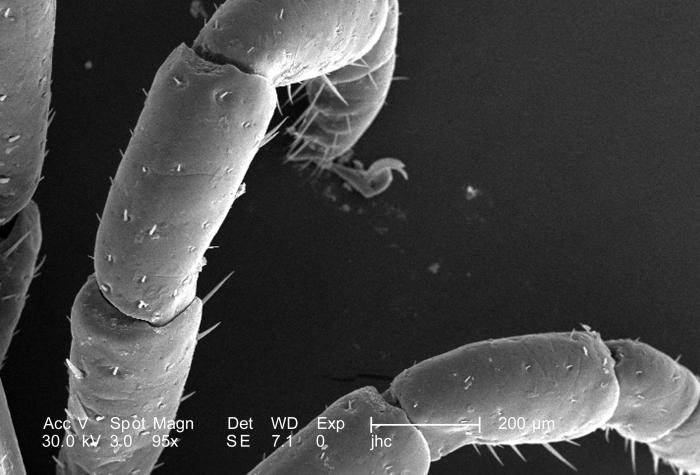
Under a relatively low magnification of 95X, this scanning electron micrograph (SEM) provided a closer view of this male Dermacentor sp. tick found upon a cat in the suburbs of Decatur, Georgia, which measured approximately 3.5mm from its gnathosoma (i.e., capitulum), which is where its mouthparts are located, to the distal abdominal margin (PHIL 9961). PHIL 9959 revealed all this tick's legs, placing it into the Phylum Arthropoda, i.e., from jointed ( 'Arthro'), and legs ('poda'), as well as the Class Arachnida, for they've eight of these legs, unlike insects, which use six appendages to move about. From proximal to distal location, each leg is comprised of a coxa, trochanter 1, trochanter 2, a femur, patella, tibia, a two-sectioned tarsus, and a two-part pretarsus, i.e., a pulvillus and claw. Here we see the femur, patella, and tibia of arachnid's left 2nd and 3rd legs.